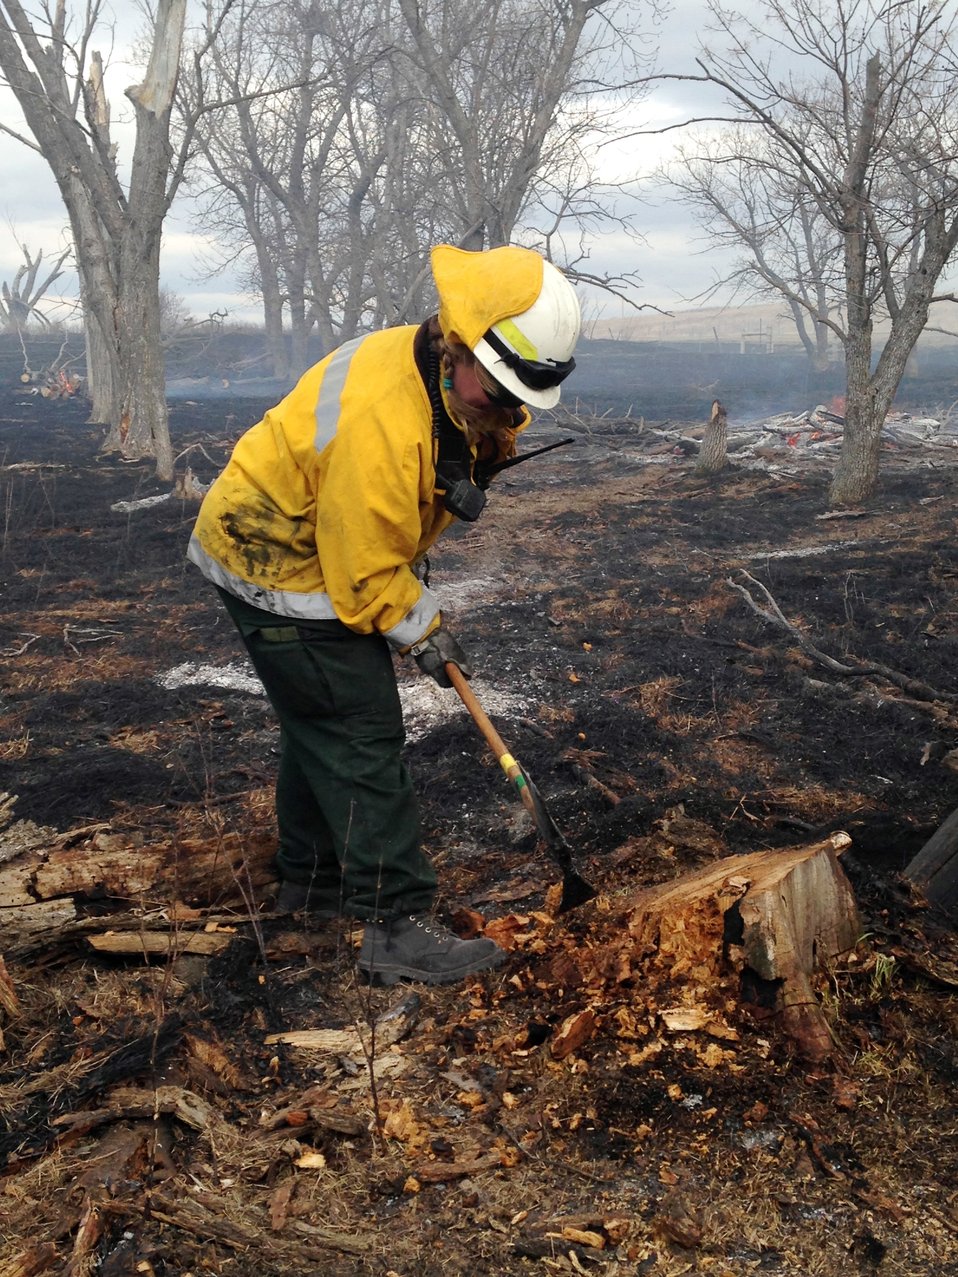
Mop Up

When a prescribed burn is completed, firefighters must make sure that all fire near the perimeter and in heavy fuels (like these stumps) is extinguished. This part of a burn is called 'mop up', and takes place after the main fire has gone through an area. All of the light fuels (grass) have been burnt to ash and the area is 'black'. Firefighters refer to being 'in the black' as a safety zone. This mop up took place on the Rau Waterfowl Production Area in the Sand Lake Wetland Management District of South Dakota.